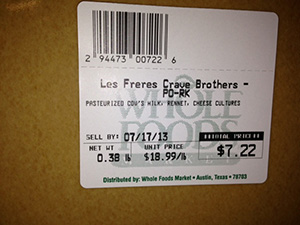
RECALLED – Cheese

July 5, 2013 – Product Recall – Whole Foods Market recalls cheese because of possible health risk.